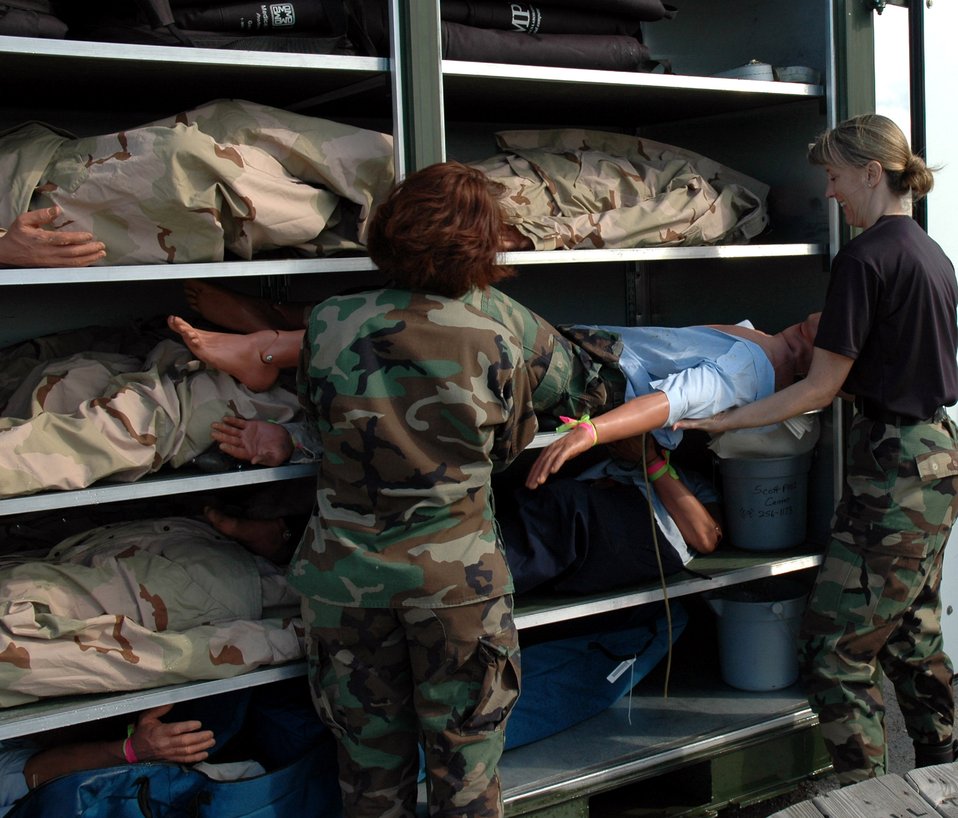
PIT crew brings realism to Pacific Lifeline exercise

Lt. Col. Jennifer McCleve and Chief Master Sgt. Chandra Gamble put a mannequin back on a shelf after inspection Jan. 30 at McChord Air Force Base, Wash. The dummy will be used during the humanitarian assistance disaster response exercise called Pacific Lifeline taking place over three Hawaiian Islands Jan. 26 to Feb. 9. More than 900 Department of Defense members are participating. Colonel McCleve is from the 446th Aerospace Medicine Squadron and Chief Gamble is assigned to the 446th Aeromedical Staging Squadron.